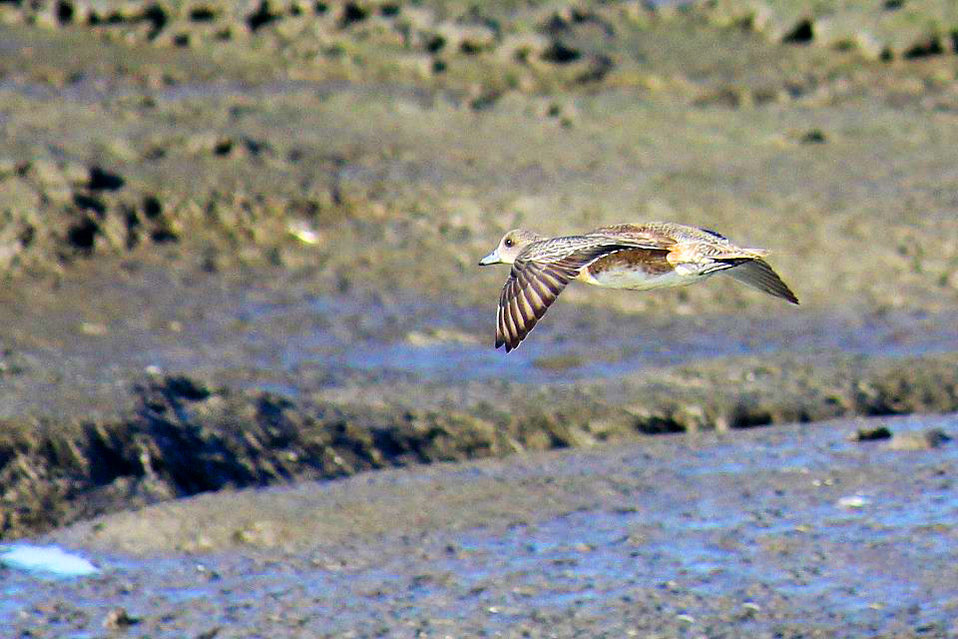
American widgeon in flight

American widgeon exploring the newly restored Pond 10 at the intersection of 8th Street from the South San Diego Bay Restoration and Enhancement Project.